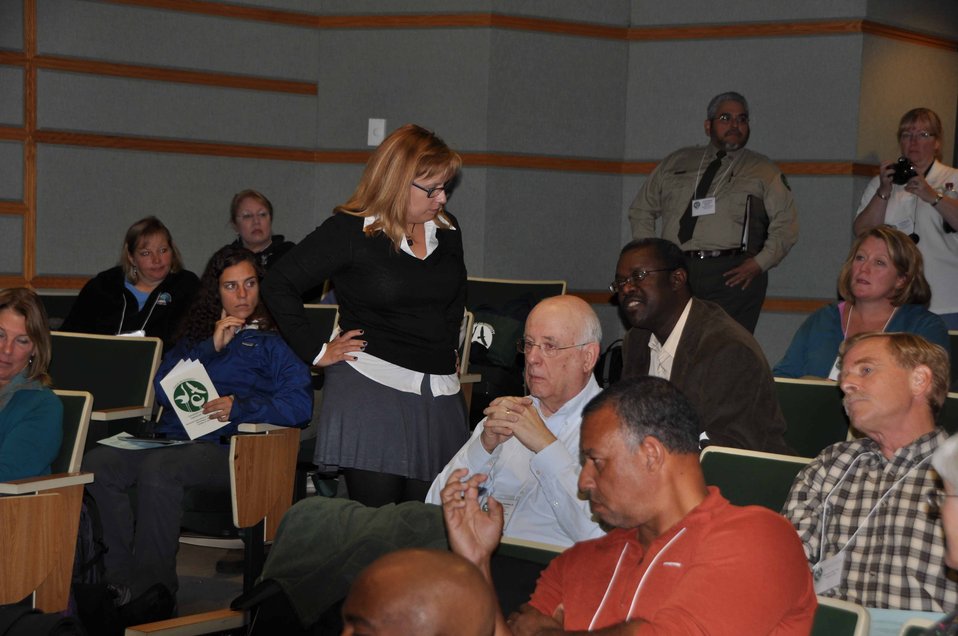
Birding Diversity Audience

Bloomington, Minn.: Sky Dogs, Bird Chick and Odd Bird land @ Minn. Valley NWR for birding convention. More: www.fledgingbirders.org
Birding Audience;.